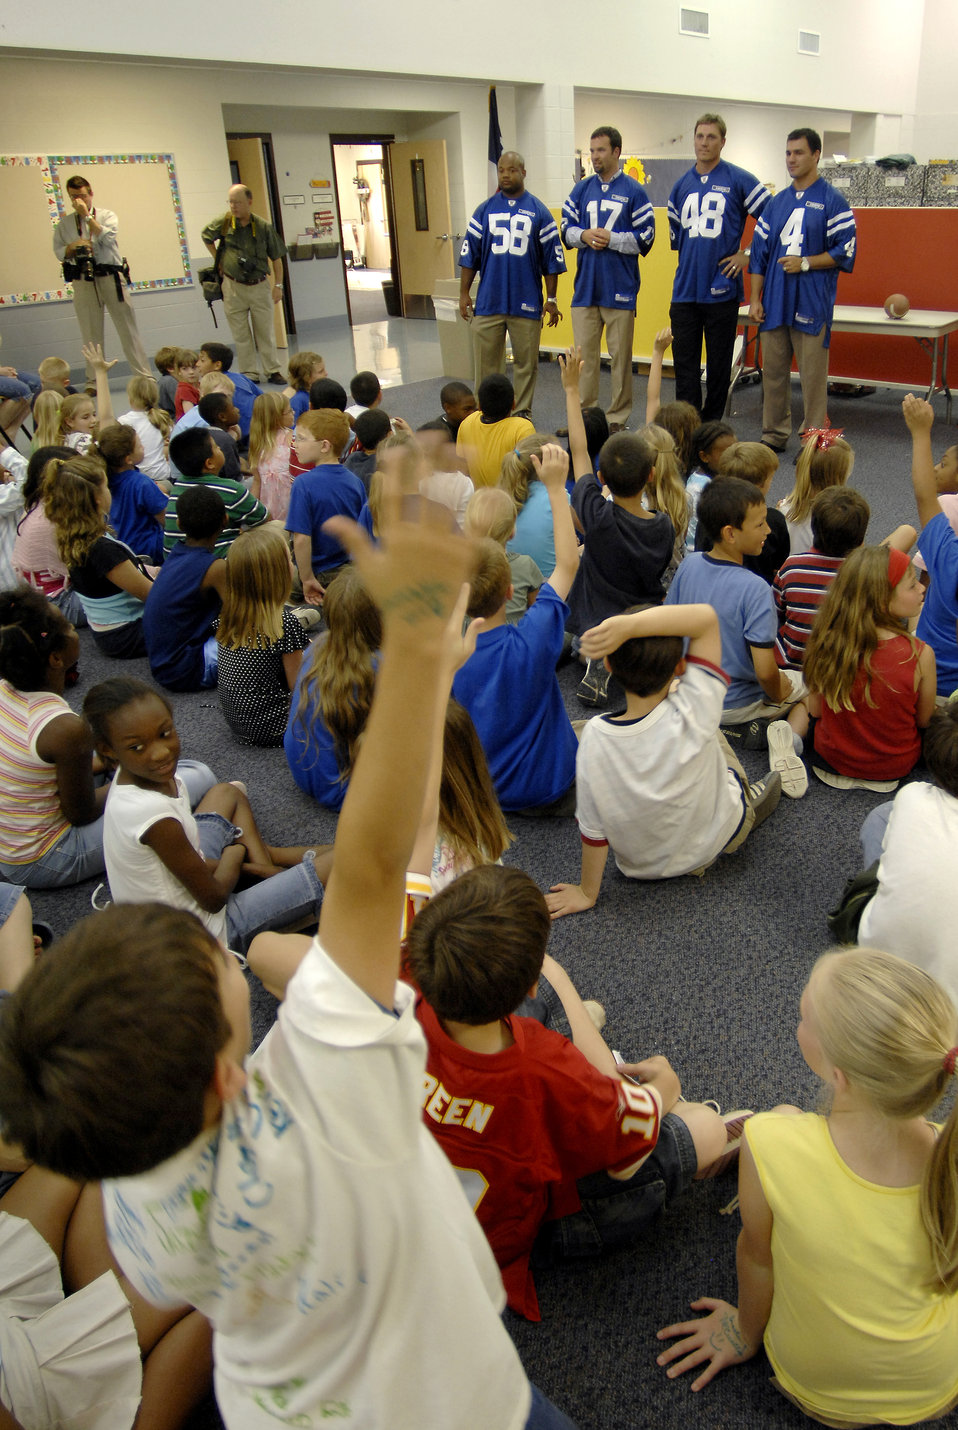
Indianapolis Colts visit Randolph Air Force Base

Indianapolis Colts (from left to right) Gary Brackett, Hunter Smith, Justin Snow and Adam Vinatieri answer questions at Randolph Elementary School on Randolph Air Force Base, Texas, June 1. Colts team members spent the day visiting with base personnel and school children, enhancing the already strong relationship between the team and the Air Force.